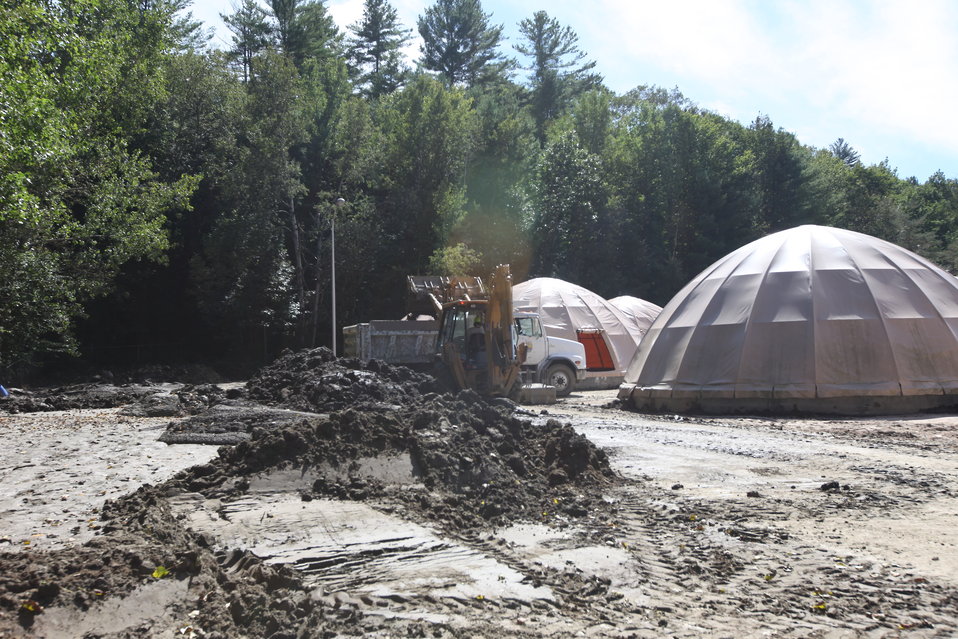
Storm damage relief at White River NFH

Heavy equipment operators came from other USFWS stations to help clean up.